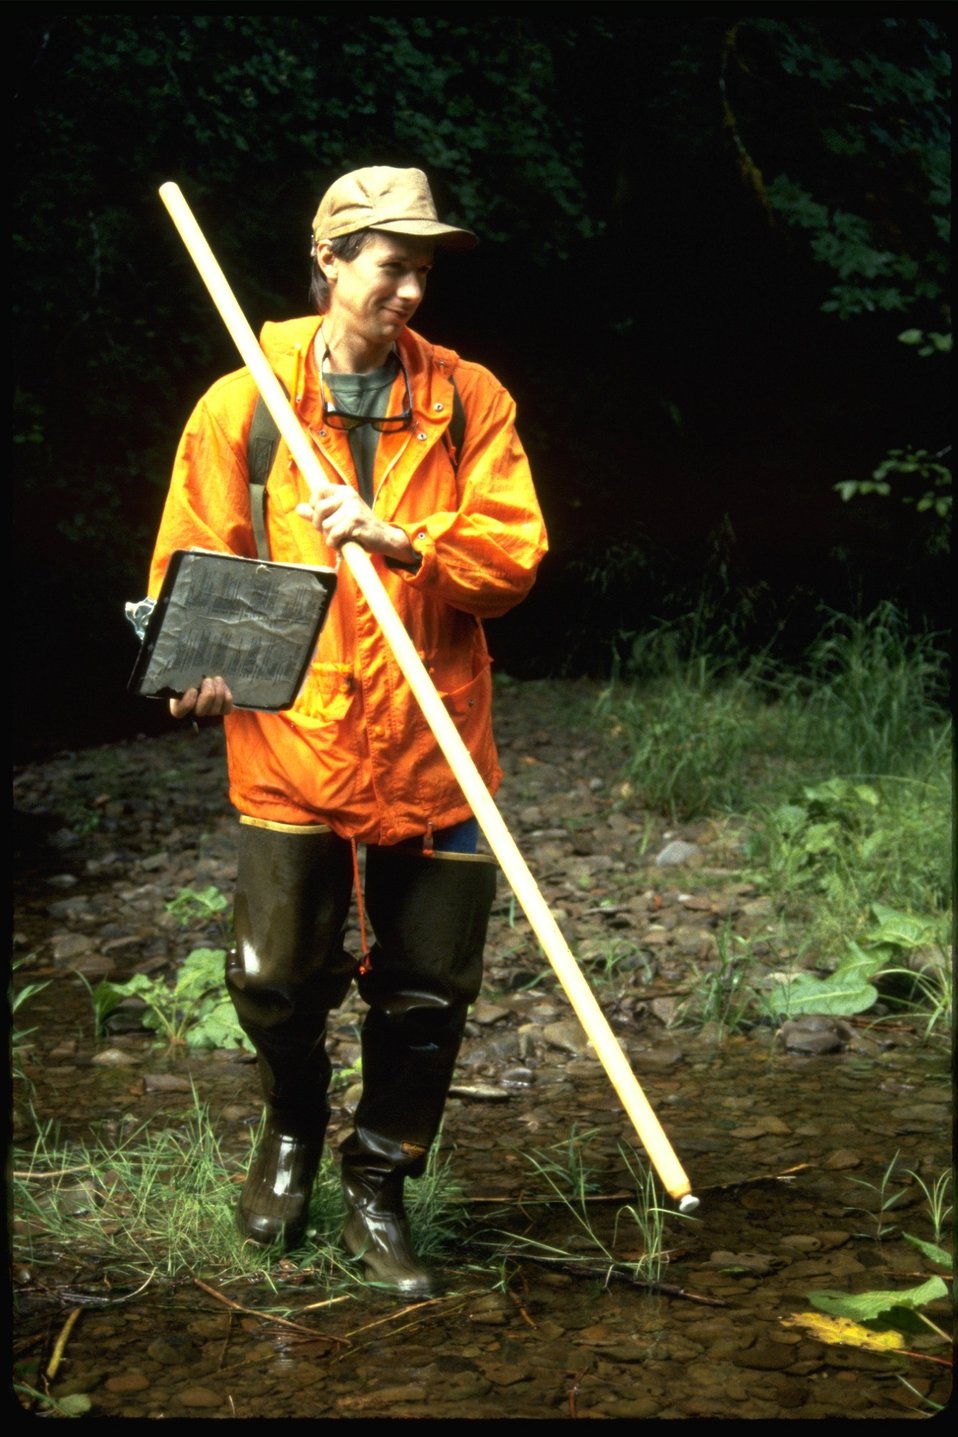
Russ surveying Smith Creek during habitat study.